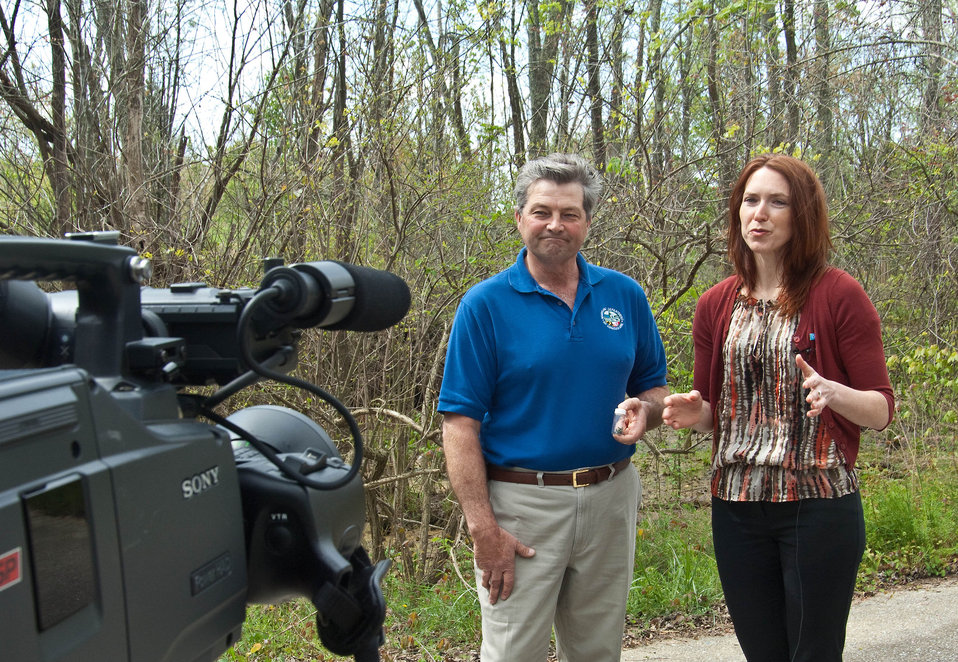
Agriculture Deputy Under Secretary for Marketing and Regulatory Programs Rebecca Blue and Maryland Agriculture Secretary Bubby Hance show the media the damage Emerald Ash Borers can do to the trees of Patuxent Wetlands Park in Anne Arundel County, MD, on Tuesday, April 10, 2012.